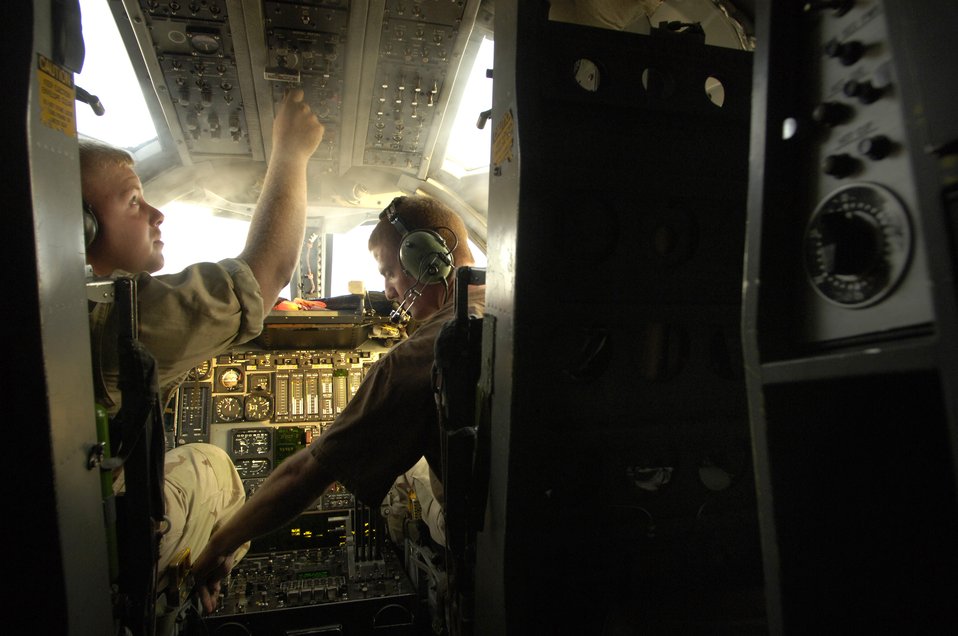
Lancer preparations

Staff Sgt. Ryan Walker (left) and Tech. Sgt. Tim Davis run through a preflight inspection in the forward crew cabin of a B-1 Lancer in Southwest Asia Sept. 28. The crew chiefs are deployed to the 379th Aircraft Maintenance Squadron from Ellsworth Air Force Base, S.D.